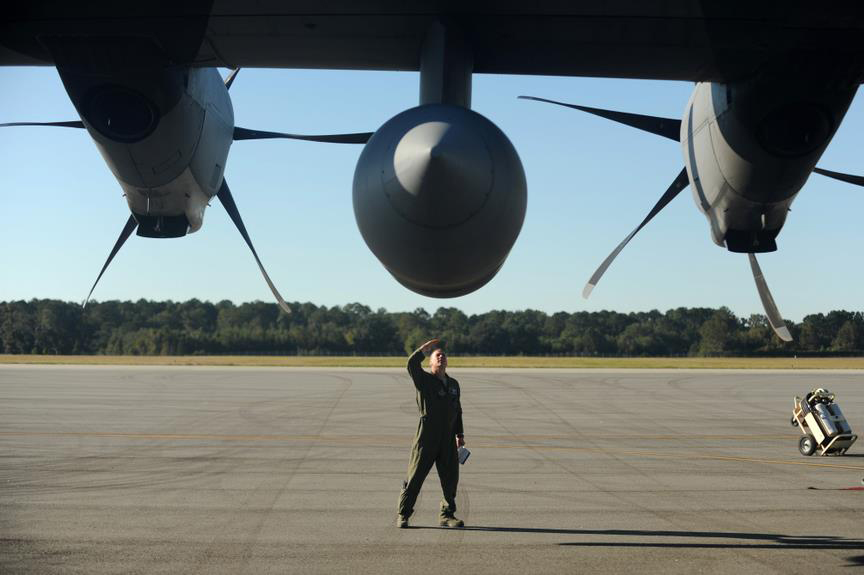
Hurricane Sandy

Tech. Sgt Chris Becyar, from the 53rd Weather Reconnaissance Squadron, conducts a pre-flight inspection on a WC-130J Hercules in preparation for a weather reconnaissance mission into Hurricane Sandy Oct. 29, 2012, at Hunter Army Airfield, Ga. The 53rd WRS conducted weather reconnaissance missions in preparation for Hurricane Sandy making landfall along the Eastern coastline of the United States.